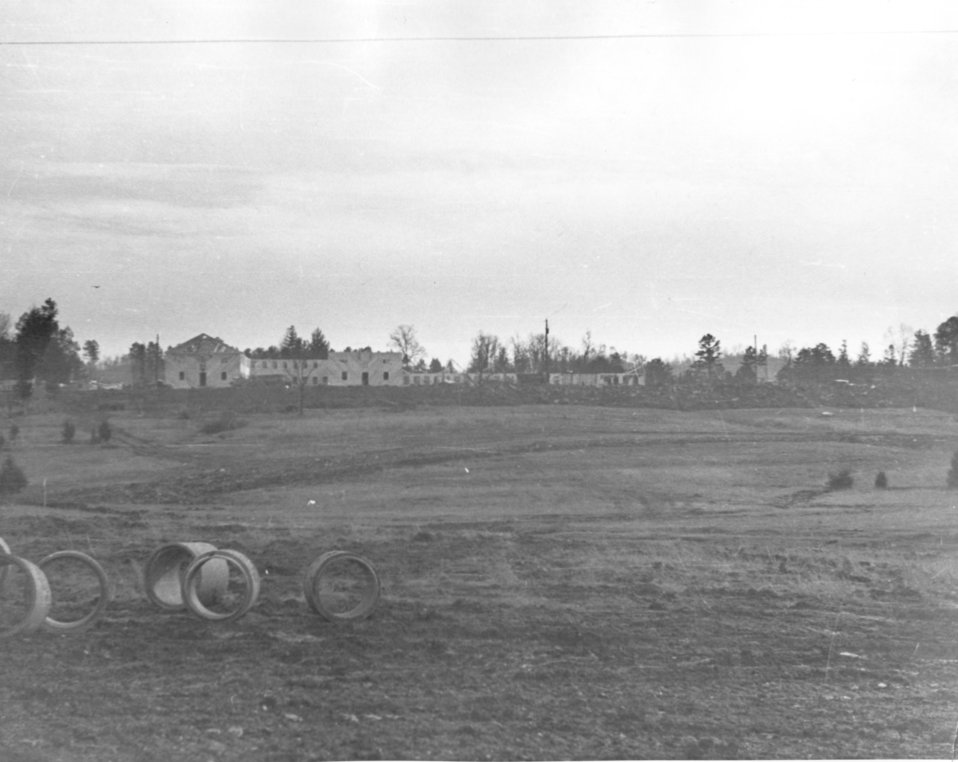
Construction activity at Oak Ridge